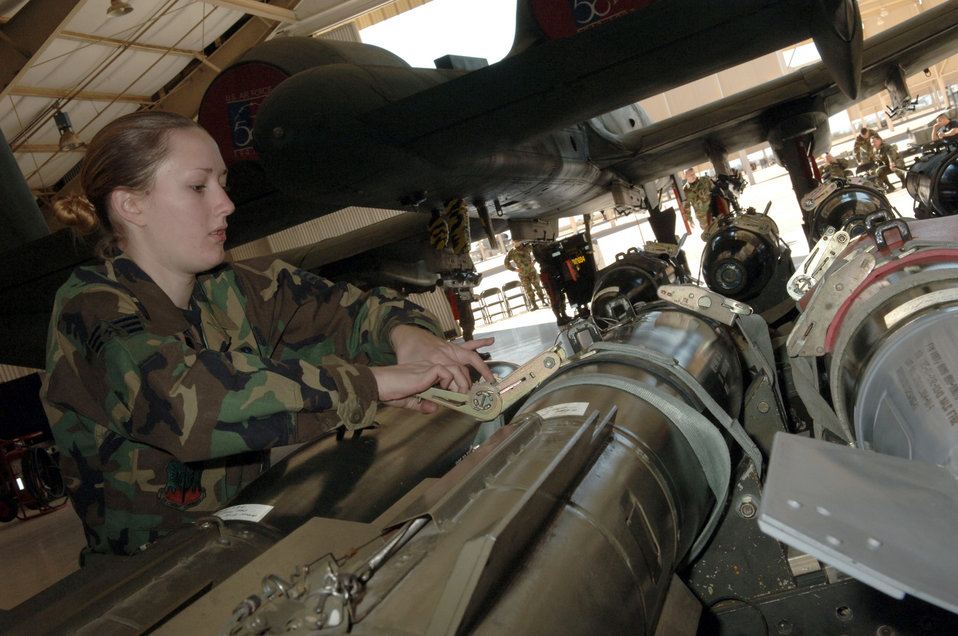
Load Crew

DAVIS-MONTHAN AIR FORCE BASE, Ariz. (AFPN) -- Senior Airman Jennifer Martin unstraps bombs and prepares to inspect them prior to loading on to the awaiting A-10 Thunderbolt as part of a load crew competition here. Airman Martin is assigned to the 355th Aircraft Maintenance Squadron, which is comprised of the 354th, 357th and 358th Aircraft Maintenance Units. The 357th AMU placed first and completed the load in 38 minutes and 44 seconds.